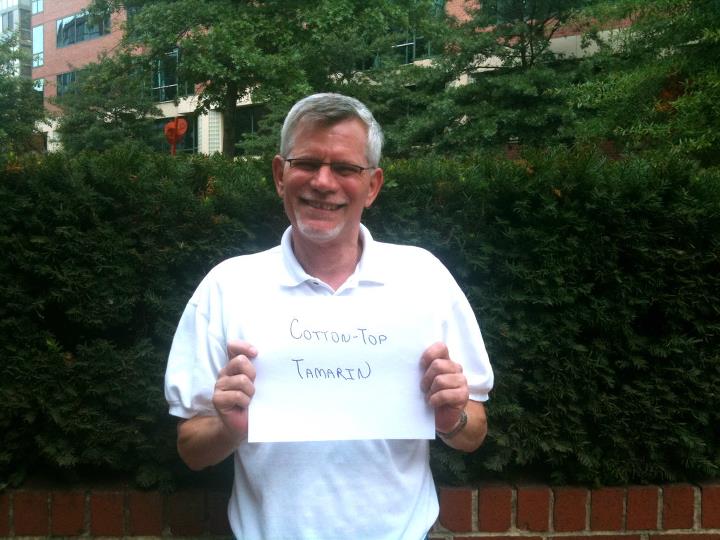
Jim Mitchell, 'Cotton-Top Tamarin,'

International Affairs participates in FFI's In Our Hands campaign